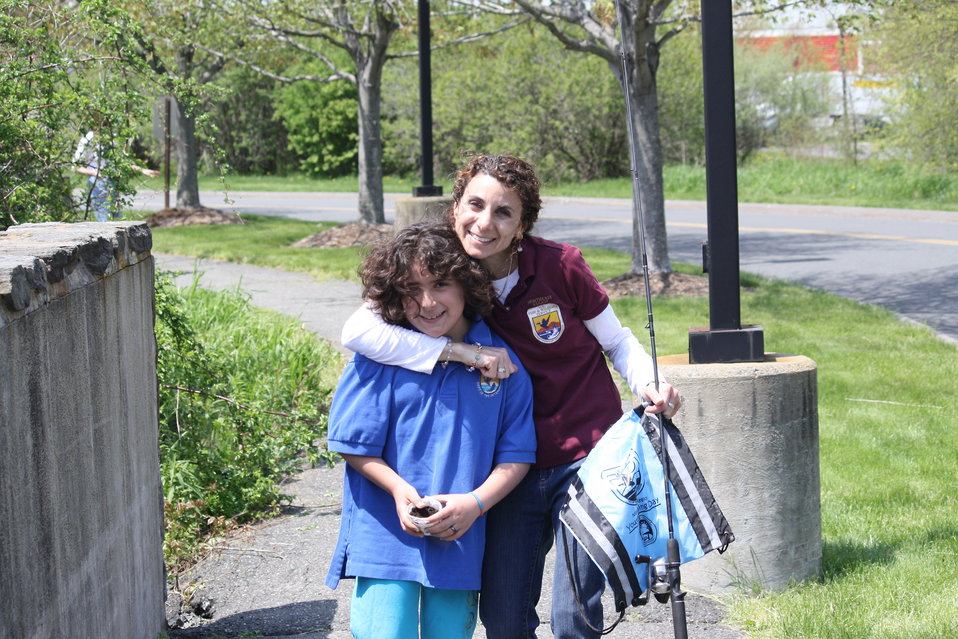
Jen Lapis with daughter

Jen organized the fishing derby at the USFWS regional office in Hadley.